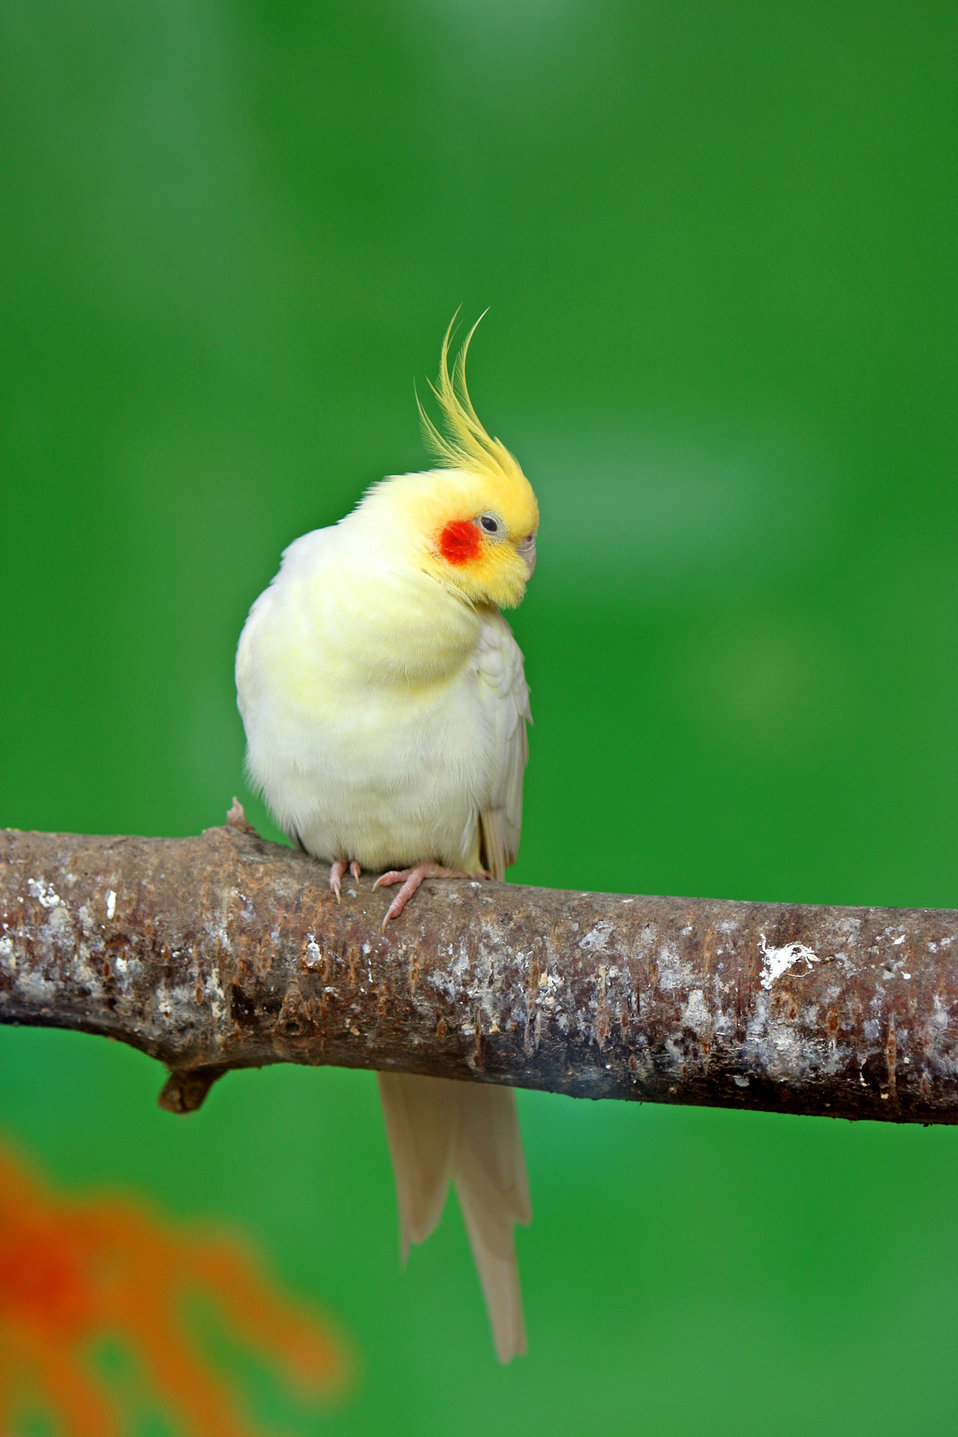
Cockatiel

Pretty little cockatiel bird perched on a branch.